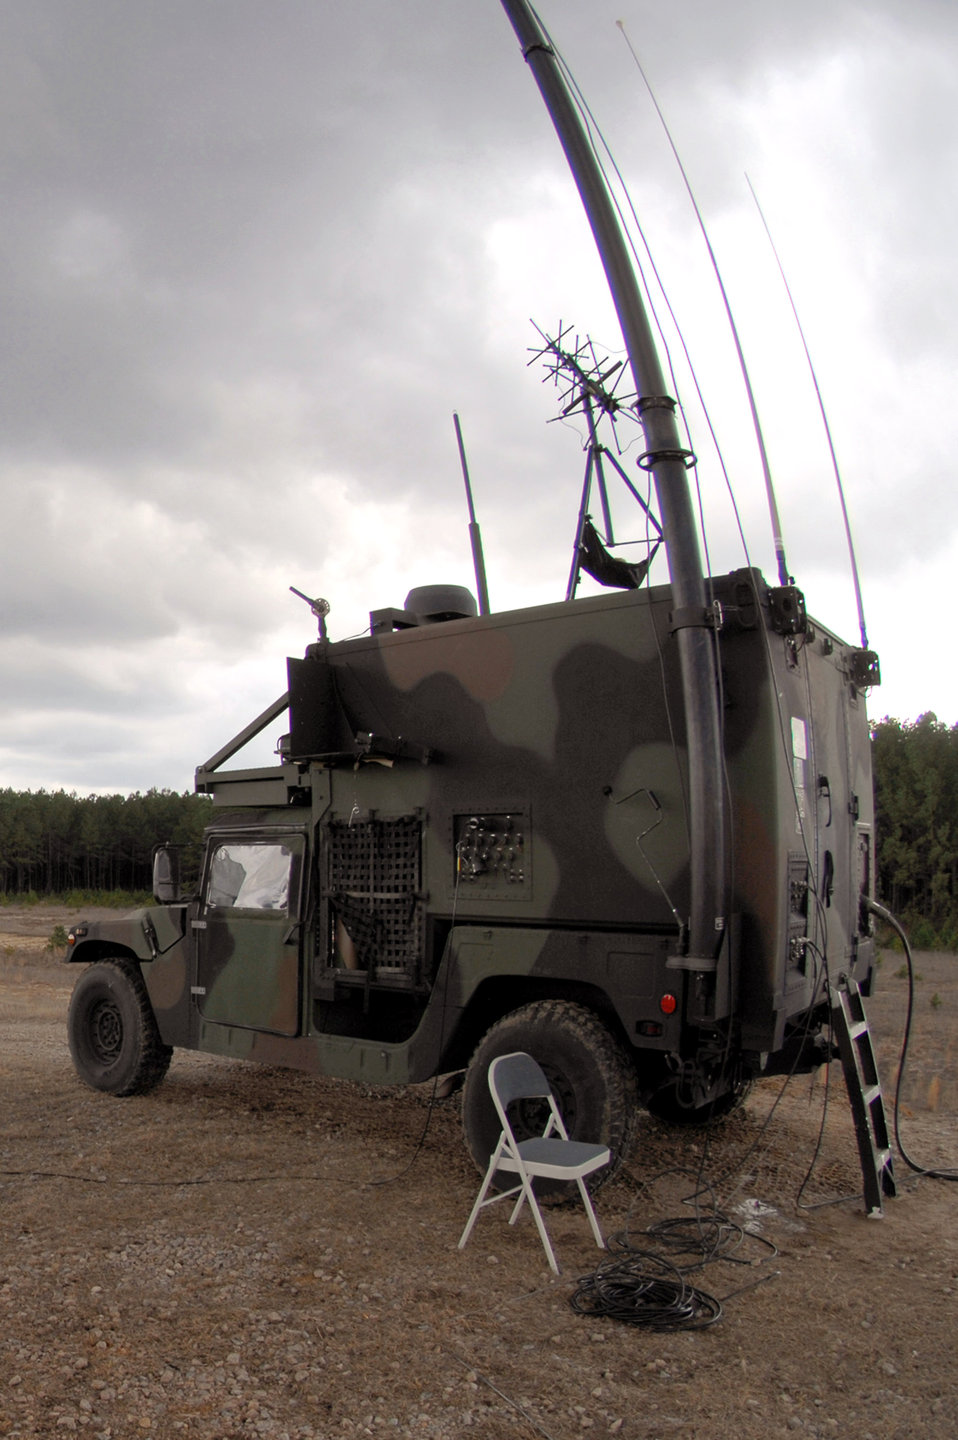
682nd ASOS performs final tests on 'Gateway'

A mobile Air Support Operations Center Gateway goes through some of its final tests during an operational readiness exercise Feb. 13 at Shaw Air Force Base, S.C. The Gateway, a vehicle mounted communications system, improves situational awareness for pilots, aircrew and joint terminal attack controllers.